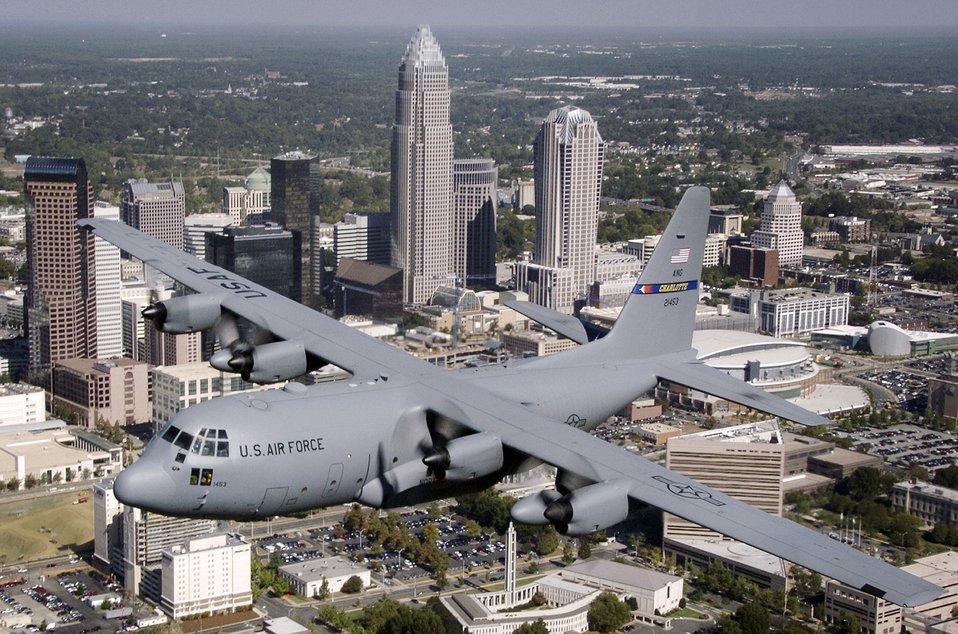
Hercules over Charlotte

A C-130 Hercules flies over the city of Charlotte, N.C. displaying the new tail markings. The updated tail has